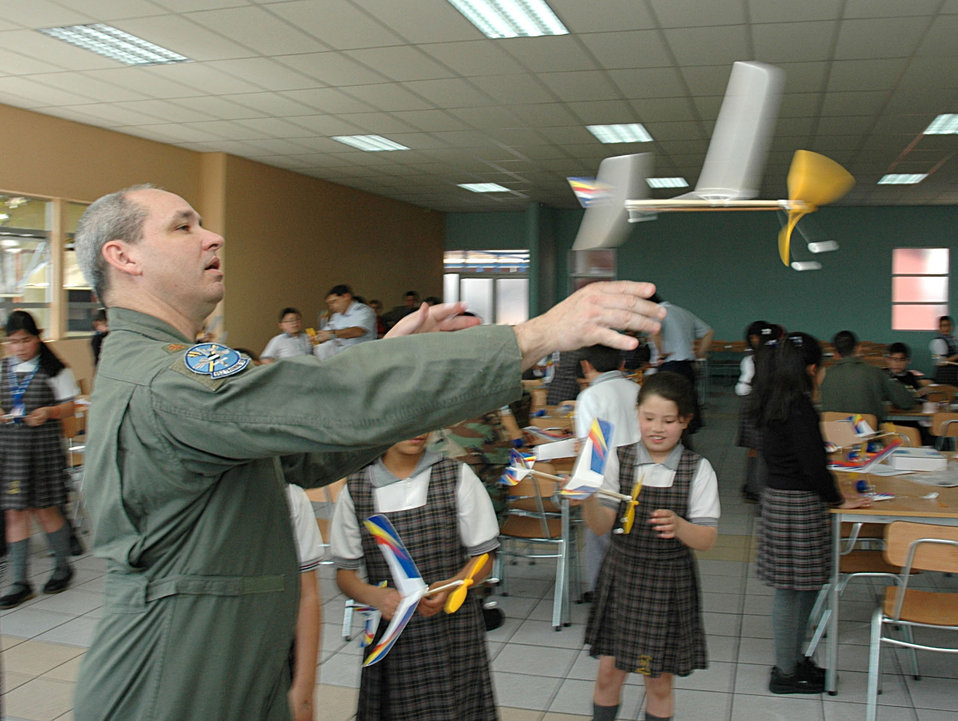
Airmen, Chilean school 'partner' to teach children aviation

Maj. Mark Jones, operations officer for the U.S. Military Group in Chile, tests his model airplane Oct. 27 during a community outreach program at the Complejo Educacional Esperanza School in Santiago, Chile. Major Jones volunteered alongside members of Air Forces Southern, Chilean air force, the U.S. Embassy, and civilian volunteers from a U.S. based technology firm. Agilent Technologies donated dozens of afterschool activities including the model aircraft to demonstrate the practical applications of science during planned community outreach events. The volunteer opportunity marked the beginning of Operation Southern Partner, an all-new program featuring more than 70 U.S. Air Force subject matter experts from about 25 career fields working alongside partner nation military members in similar career specialties during week-long exchanges.